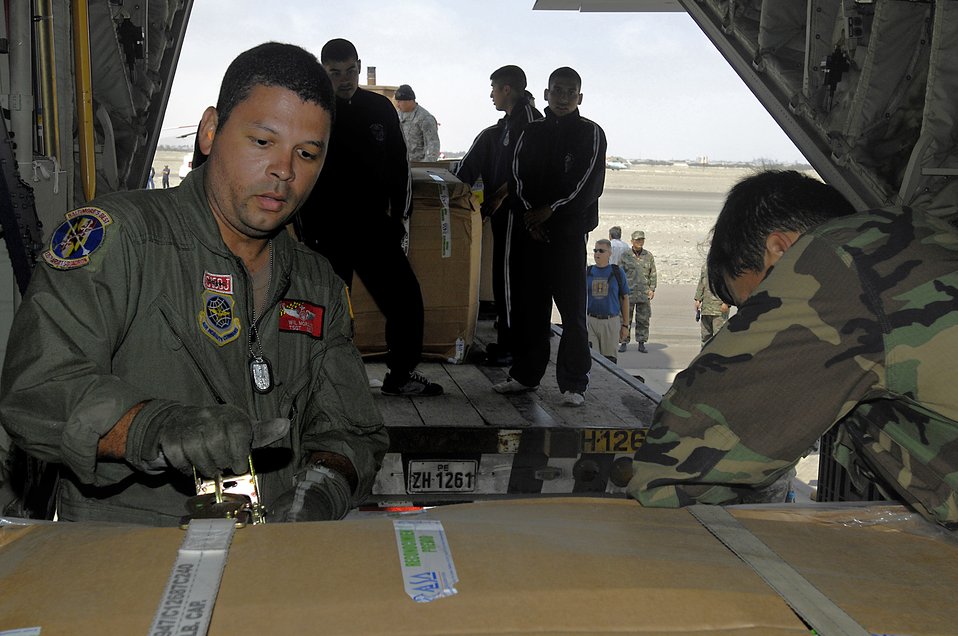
Peruvian support

Tech. Sgt. Wilbert Morales and Peruvian aid workers unload supplies from a C-130 Hercules aircraft Aug. 19 in Pisco, Peru. The supplies are for the victims of an 8.0 magnitude earthquake that hit parts of western Peru. Around 80,000 Peruvians have been affected by the earthquake, and 80 percent of the homes were destroyed in the city of Pisco. Sergeant Morales is with the Maryland Air National Guard.